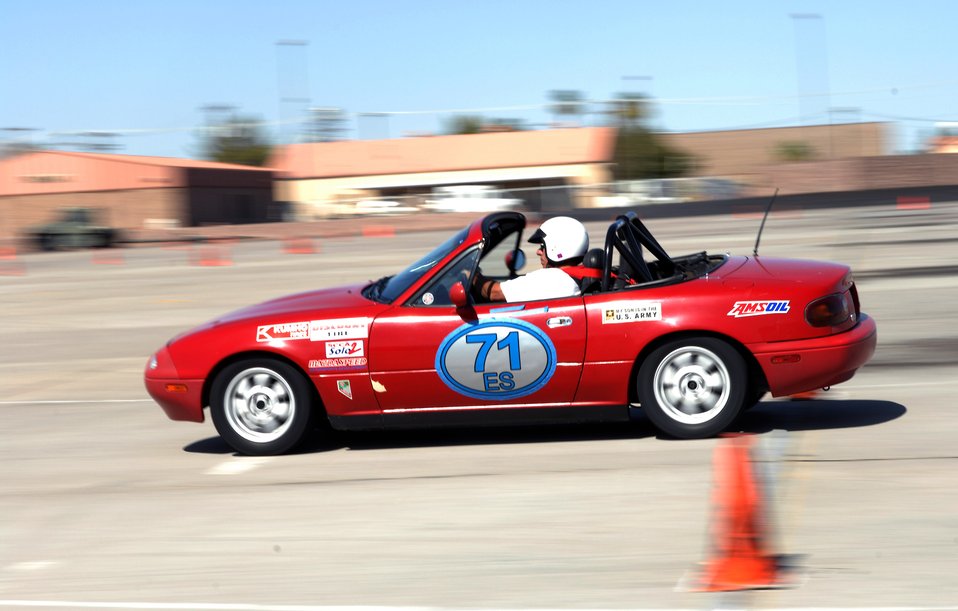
Airmen test their limits at autocross

An Airman participates in the mile shoot out event during the Nellis Autocross Sept. 29 at Nellis Air Force Base, Nev. The autocross is a two-day event that includes a fighter vs car race, a mile shoot out, and a car show. Airmen from Nellis and Creech Air Force bases participated during the events.